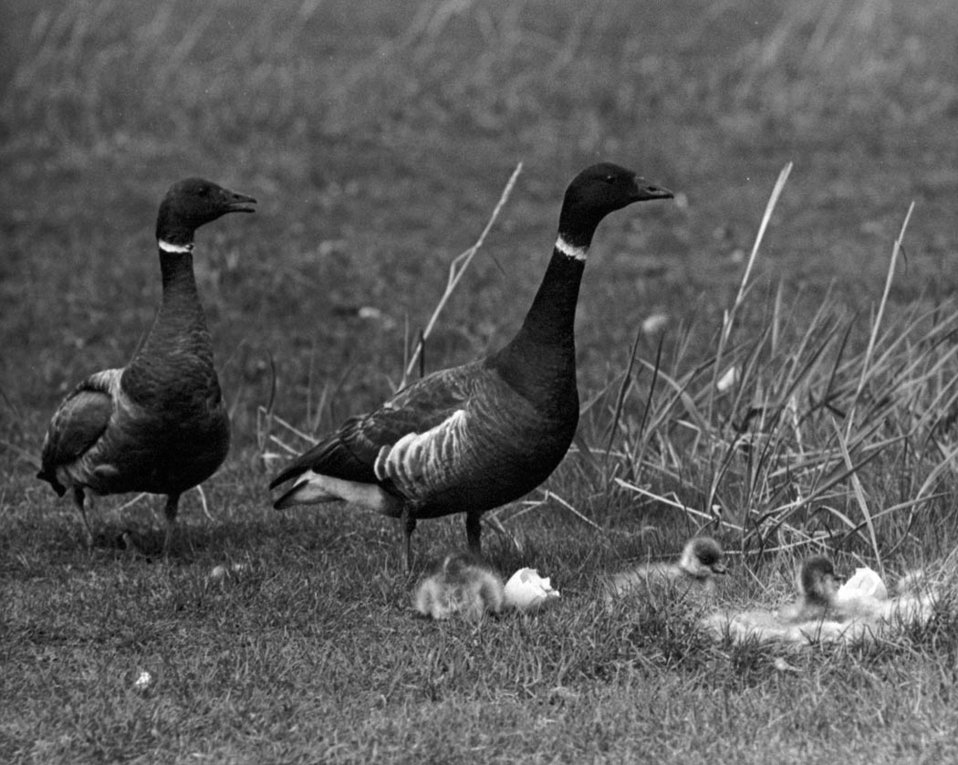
Brant (Branta bernicla)

Brant are usually not found in Utah. However, as one of the 5 species eligible for the 2012 Federal Duck Stamp Art Contest, we hope to see several at Weber State University in Ogden, Utah September 28-29, 2012.

Brant (Branta bernicla): There are 2 subspecies of this true sea goose. They both are similar in appearance, behavior, and food habits. The American Brant (Branta bernicla hrota) is the Atlantic Coast resident. It is also referred to as the white bellied brant for obvious reasons. This brant feasted on eel grass until the early 1930’s when its food source was wiped out. It survived in lower numbers eating sea lettuce. Brant numbers have slowly rebounded in response to eel grass coming back in the tidal bays on the Atlantic sea shore. The American Brant breeds up in Northern Canada around the Ungava Peninsula and the southern end of James Bay. The Black Brant (Branta bernicla nigricans) is the Pacific coast relative of its east coast cousin. It is so called the black brant due to its dark belly. While this bird winters along the Pacific coast, its breeding range extends up into the western half of Northern Canada with the main breeding location around Yukon-Kuskokwim Delta in western Alaska.